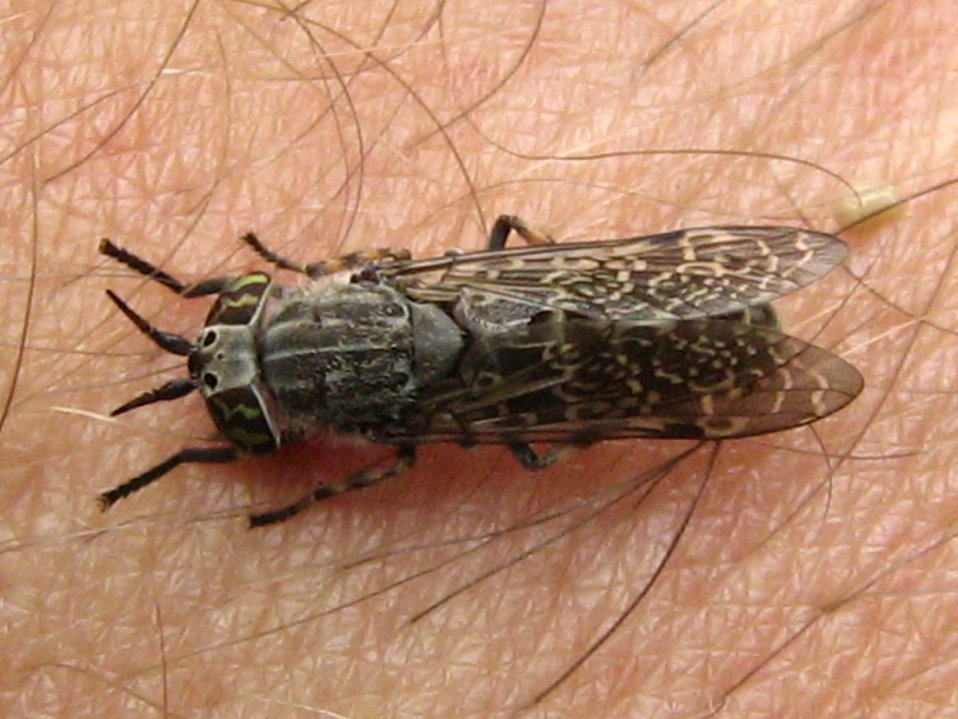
Deutsch: Haematopota pluvialis, die „Regenbremse“ oder „Blinde Fliege“. Früher wurde sie wiss. Chrysozona pluvialis L. genannt. Fotografiert in einem Wald bei Nauen (Brandenburg).